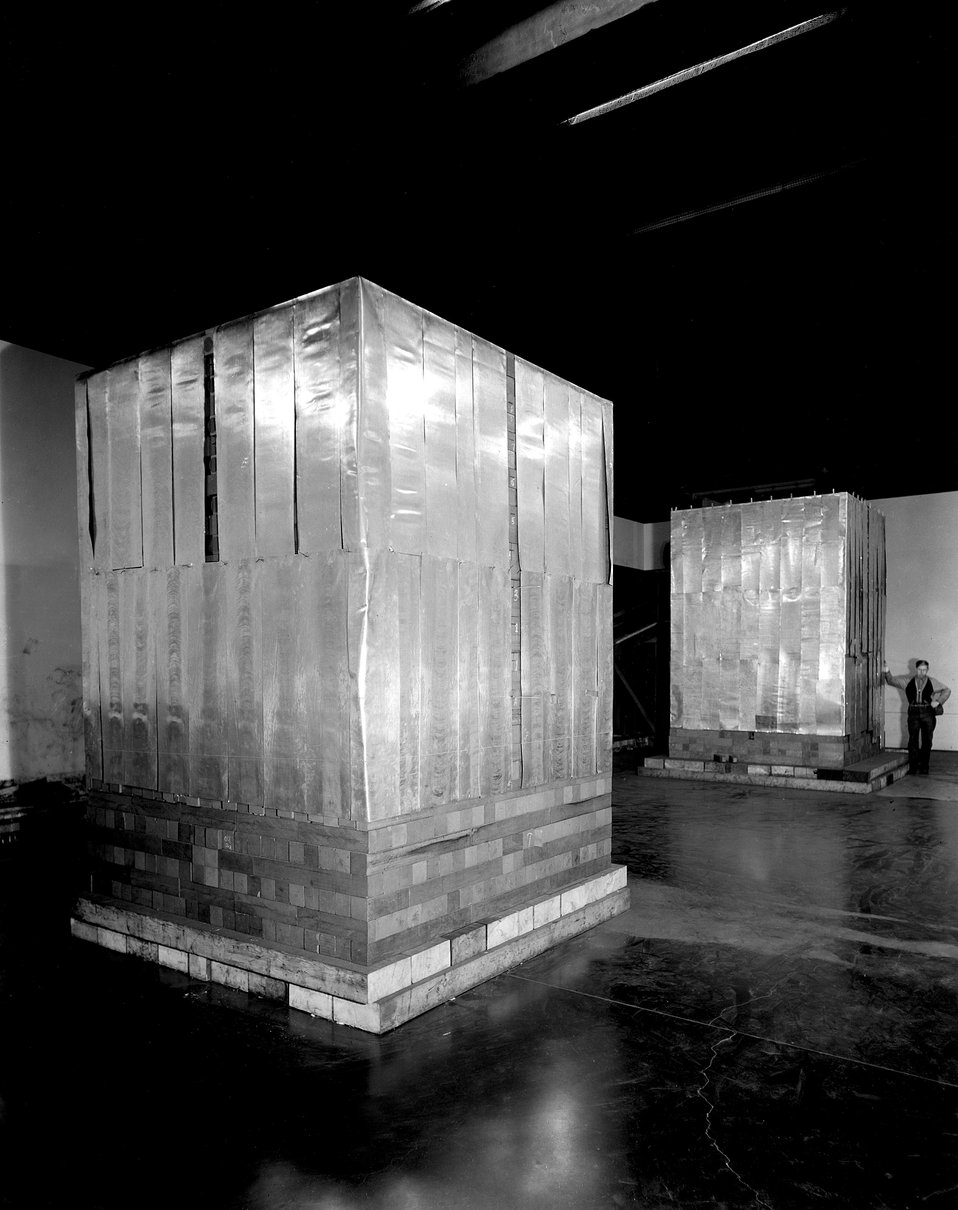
The exponential piles were constructed in 1942 under the West Stands of Stagg Field at the University of Chicago..